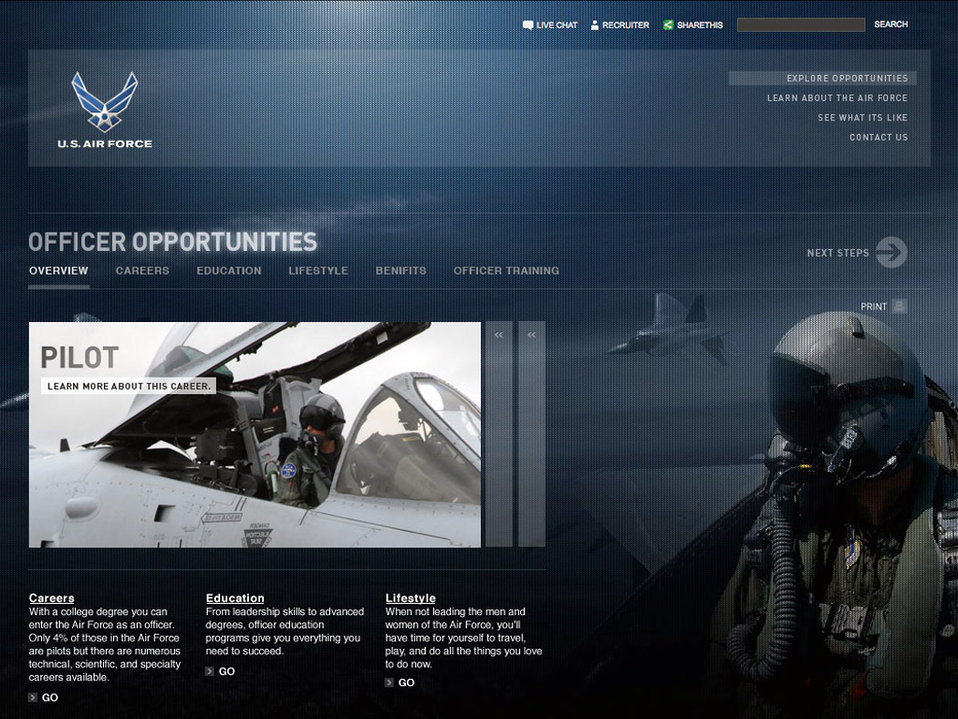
Air Force recruiting Web site redesign launched

Incorporating the latest Internet technologies while reflecting the way ahead for the service, Air Force Recruiting Service officials launched their redesigned Web site Dec. 15 at airforce.com.